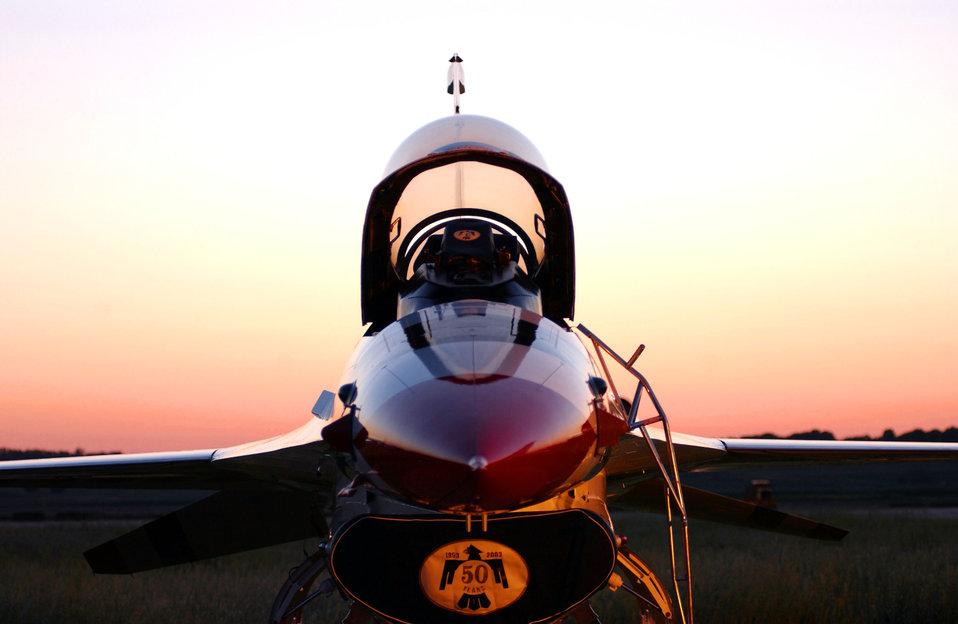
Thunderbird sunset

SIOUX FALLS S.D. -- An F-16 Fighting Falcon from the U.S. Air Force Thunderbirds sits on the tarmac at Joe Foss Field, S.D. The premier Air Force aerial demonstration team performed in an air show for 40,000 specatators the following day.